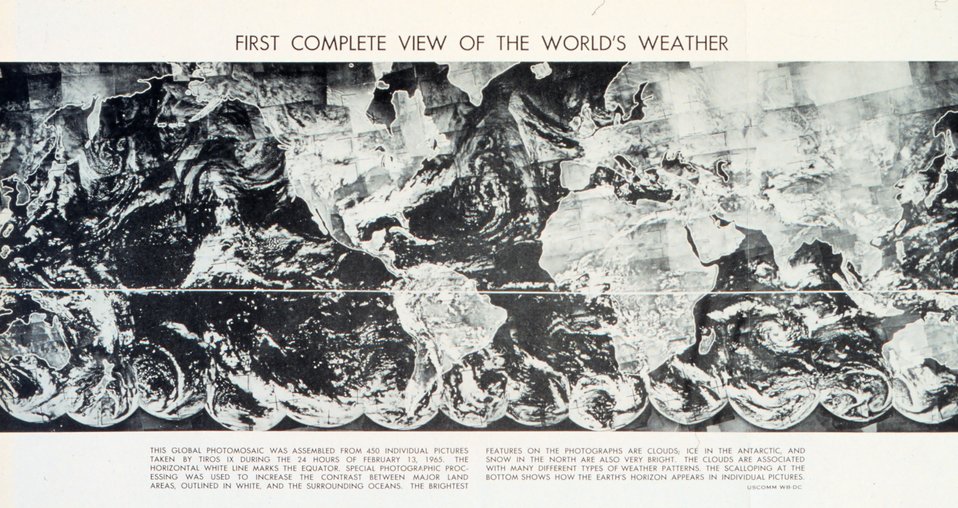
First complete view of the World's Weather - photogaphed by TIROS IX. Image assembled from 450 individual photographs.